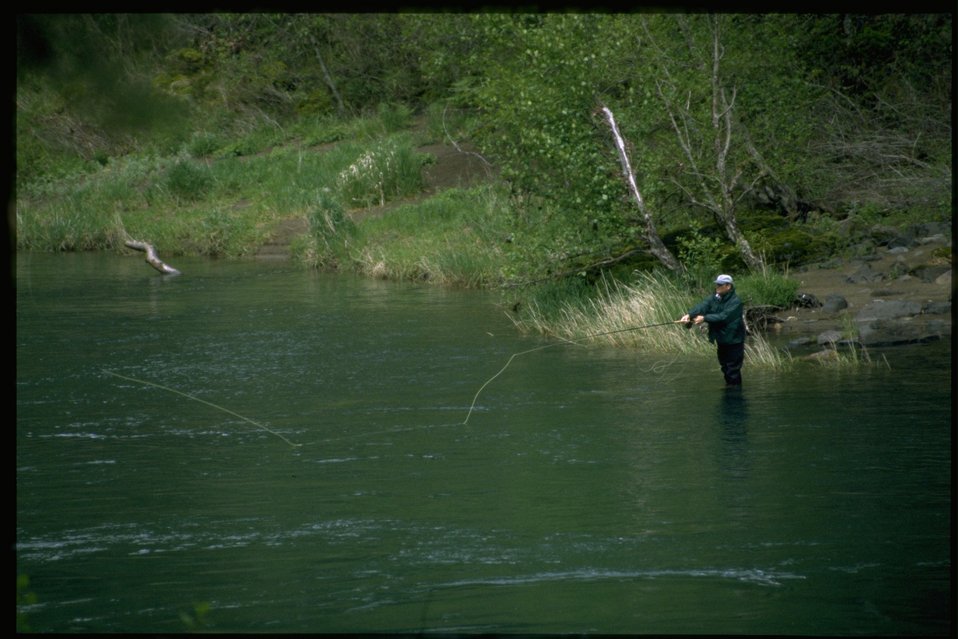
Man fishing in Swiftwater stream.